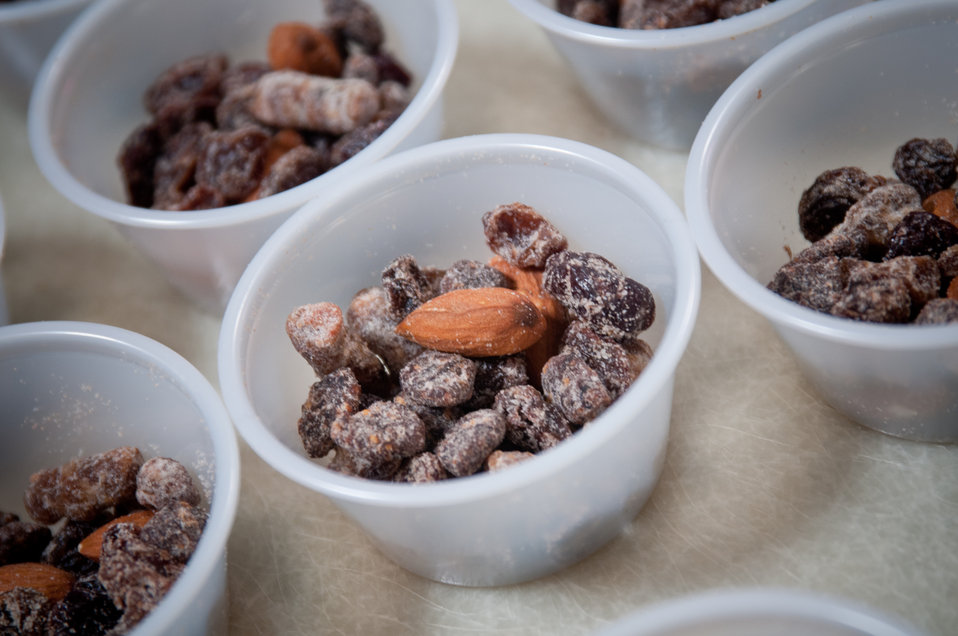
Nuts and died fruit were offered to passersby at the Agricultural Marketing Service (AMS) table, during the Department of Agriculture celebration of the Dietary Guidelines for Americans, 2010, an information event in the Whitten Café in Washington, D.C., on Wednesday, March 2, 2011. This first Wednesday event of March, had representatives from AMS; Agricultural Research Service (ARS - including Food and Nutrition Information Center - FNIC, and Food Safety Information Center – FSIC); Economic Research Service (ERS); Food, Nutrition & Consumer Services (FNCS); Food Safety and Inspection Service (FSIS); National Institute of Food and Agriculture (NIFA); USDA Office of Operations (Departmental Management); Food and Drug Administration (FDA); and Sodexo.